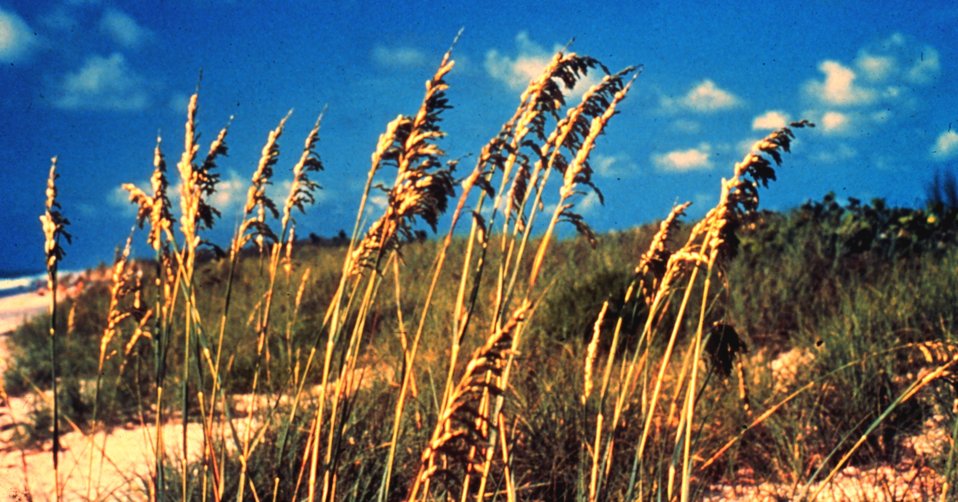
Sea oats are one of the important plants found on the sand dunes within Canaveral National Seashore. The sea oats trap the sand as it blows in from the beach and allows the sand dunes to grow.